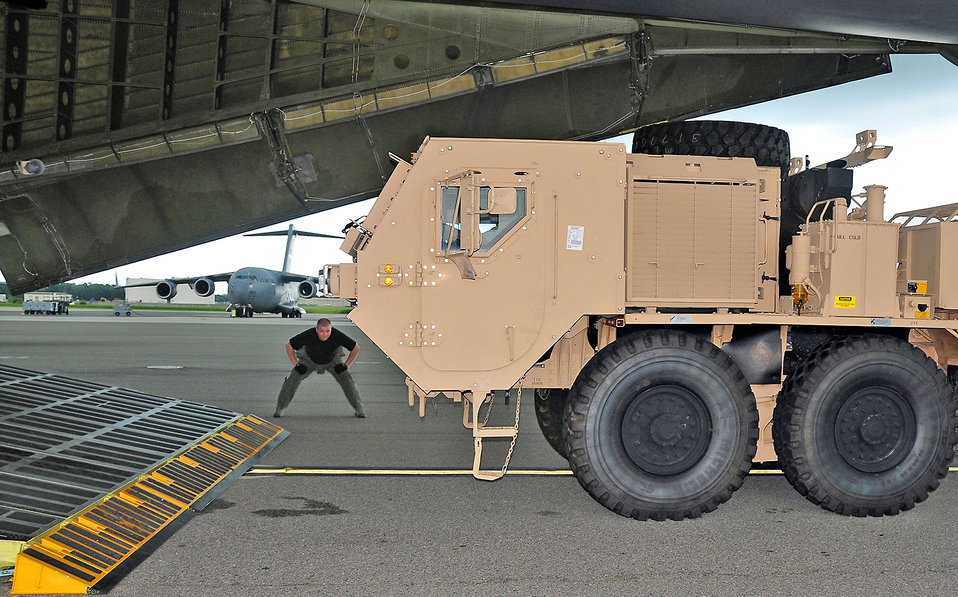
Airmen keep airlift mission moving

Tech. Sgt. Andrew Cavanaugh supervises the loading of a mine-resistant ambush-protected vehicle onto a C-5 Galaxy July 31 at Charleston Air Force Base, S.C. The MRAP vehicle is a next-generation armored truck and was transported to a deployed location in Southwest Asia. Sergeant Cavanaugh is a loadmaster with the 337th Airlift Squadron from Westover Air Reserve Base, Mass.